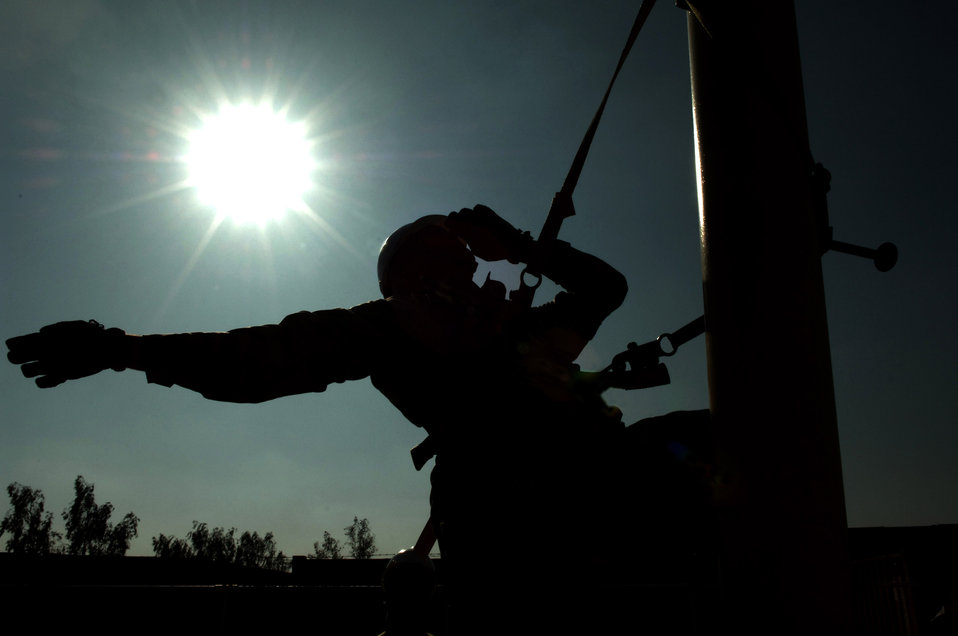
Certification

Staff Sgt. Erik Perez demonstrates how to climb a 170 foot antenna tower Jan. 14 in Southwest Asia. Maintainers must accomplish their climber certification training annually in order to work on antenna towers and keep them fully functional and mission ready.